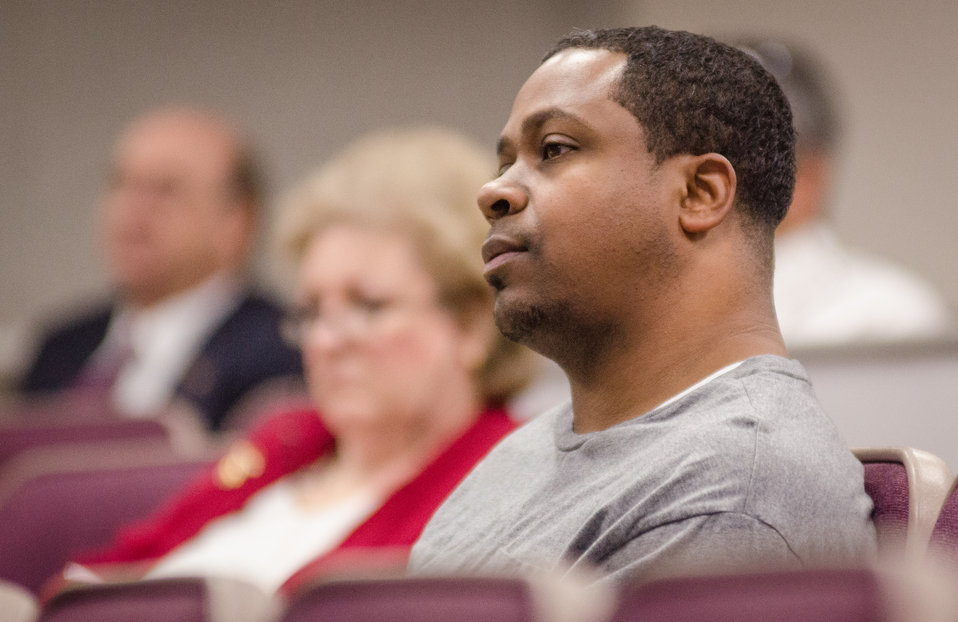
Staffers and farmers came together for the “Virginia State University (VSU), U.S. Department of Agriculture (USDA) and Virginia Farmers Working Together” outreach workshop in the VSU, L. Douglas Wilder building on Thursday, March 7, 2013, in Petersburg, VA. Farmers shared and learned new ways to do more with USDA services, and how to apply for programs that will help grow their business.